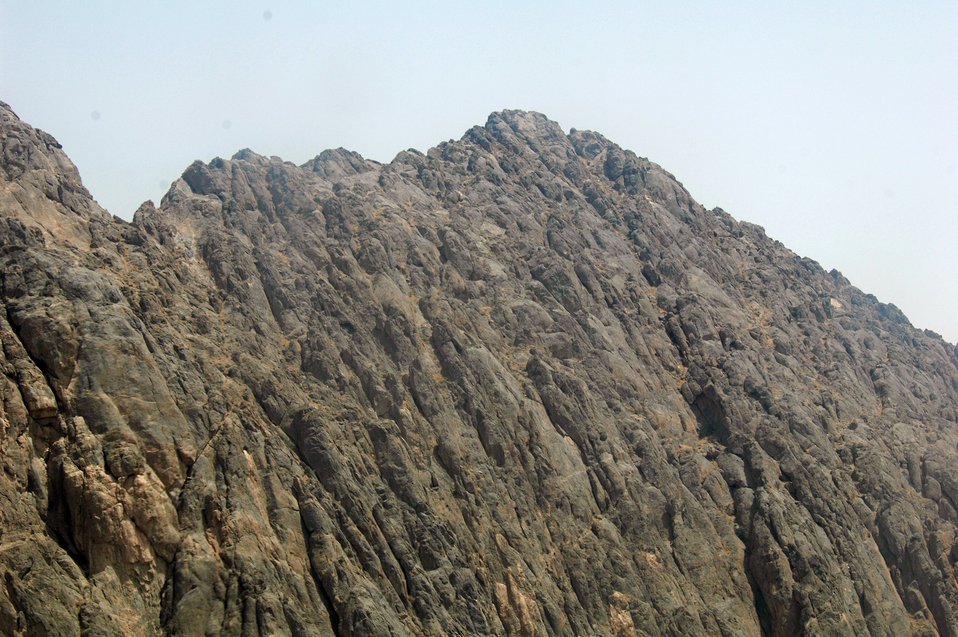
CODEL Berman